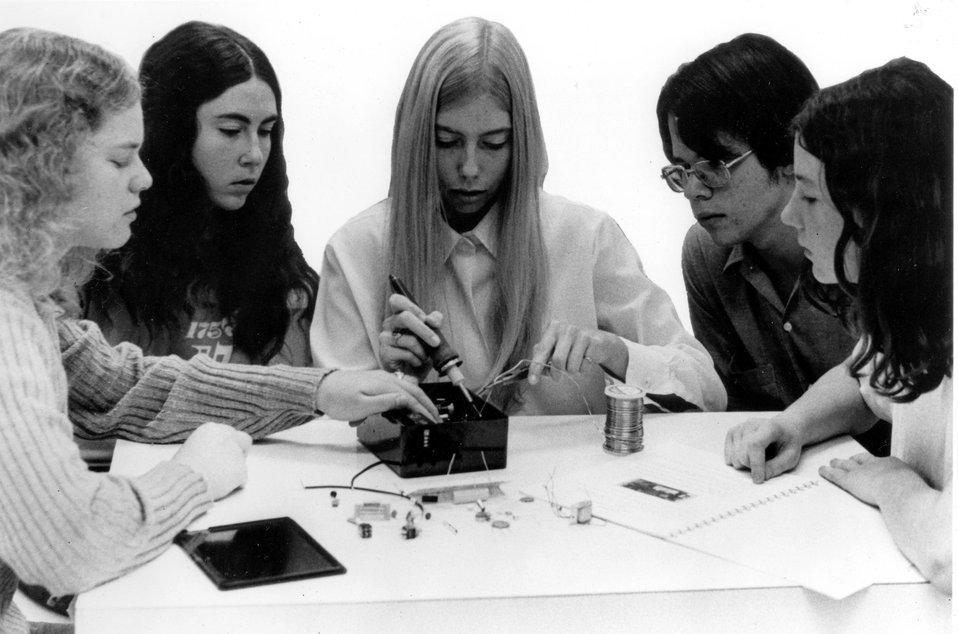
A group of high school students constructs basic measuring devices for testing air, water, noise, and radiation-pollution levels. c. 1972